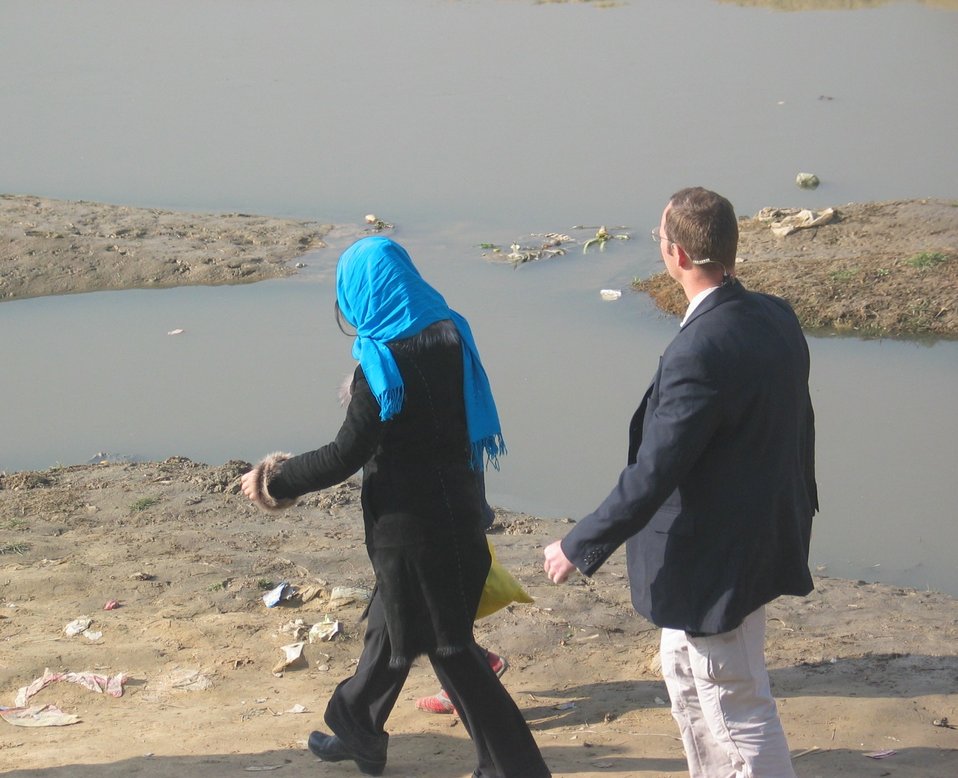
Kabul River Bridge Renovation, December 3, 2010